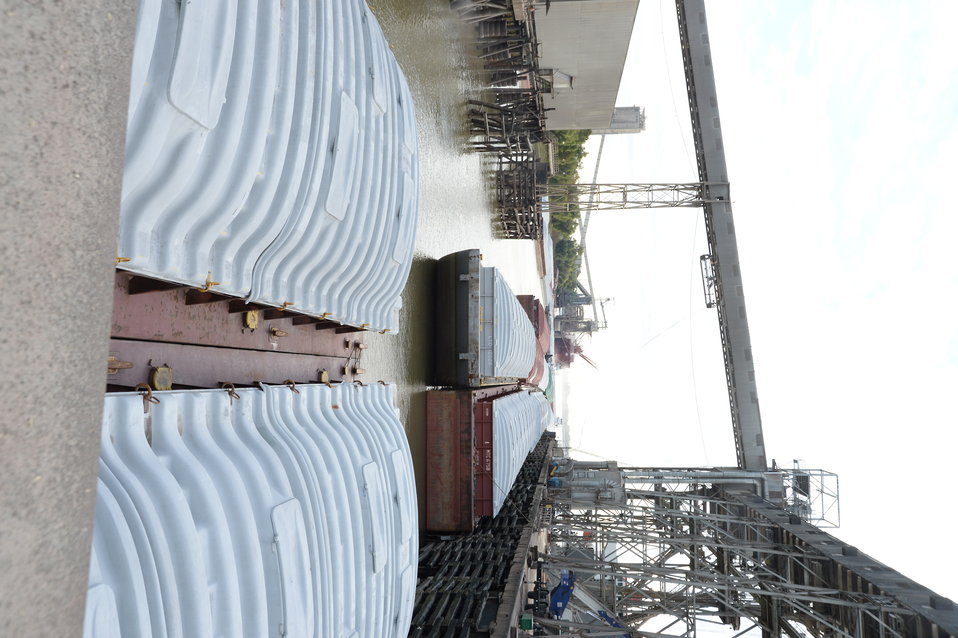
Barges are lined up waiting to transfer grain to storage facilities near the Port of New Orleans in New Orleans, LA on Tuesday, Nov. 19, 2013.